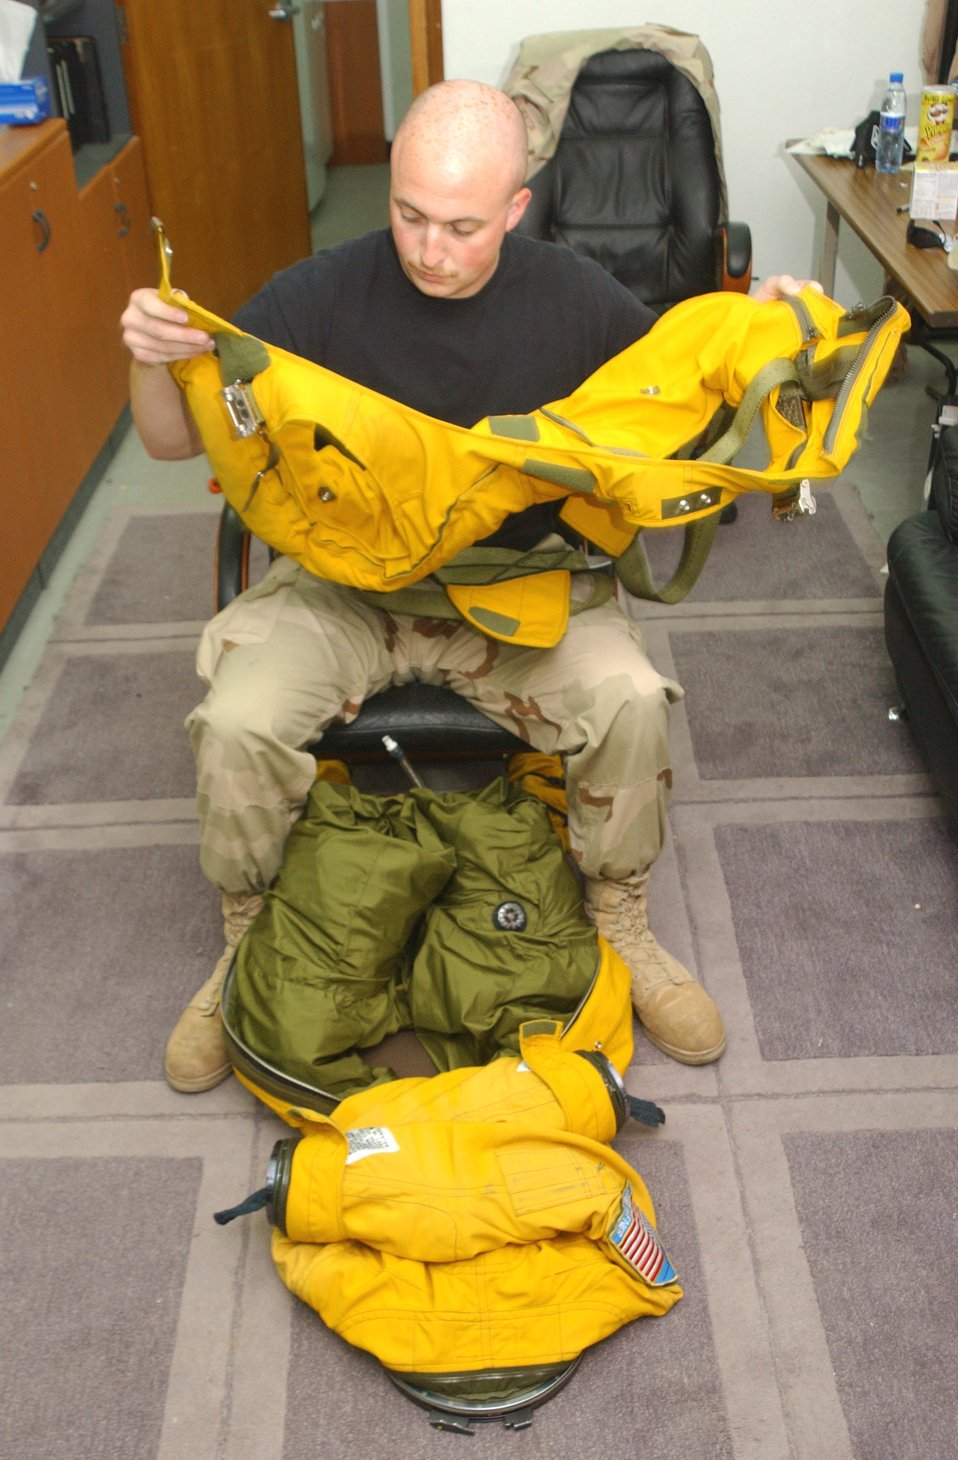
U-2 operations

Senior Airman Shawn Nyer examines the vest for a full-pressure suit worn by U-2 pilots at a forward operating base in Southwest Asia Sept. 5. Airman Nyer, a physiological support specialist assigned to the 99th Expeditionary Reconaissance Squadron, is deployed from Beale Air Force Base, Calif.